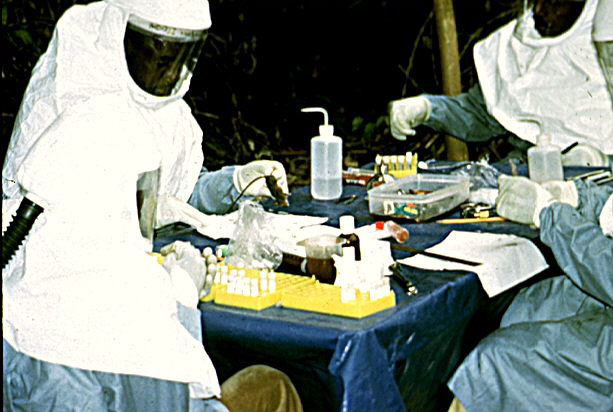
CDC and Zairian scientists take samples from animals collected near Kikwit, Zaire, 1995.